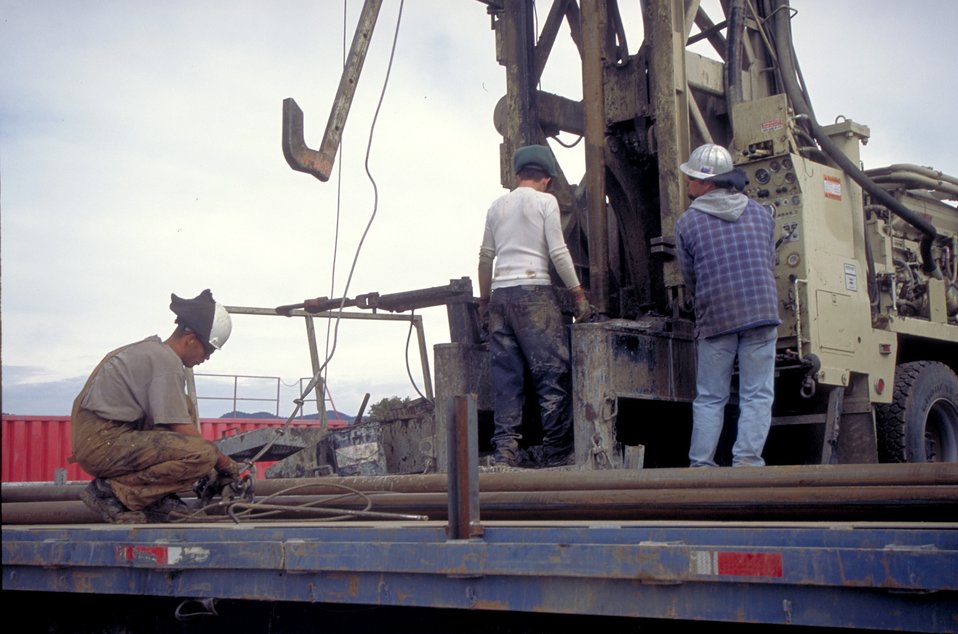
Drilling for coal bed methane near Price, Utah.